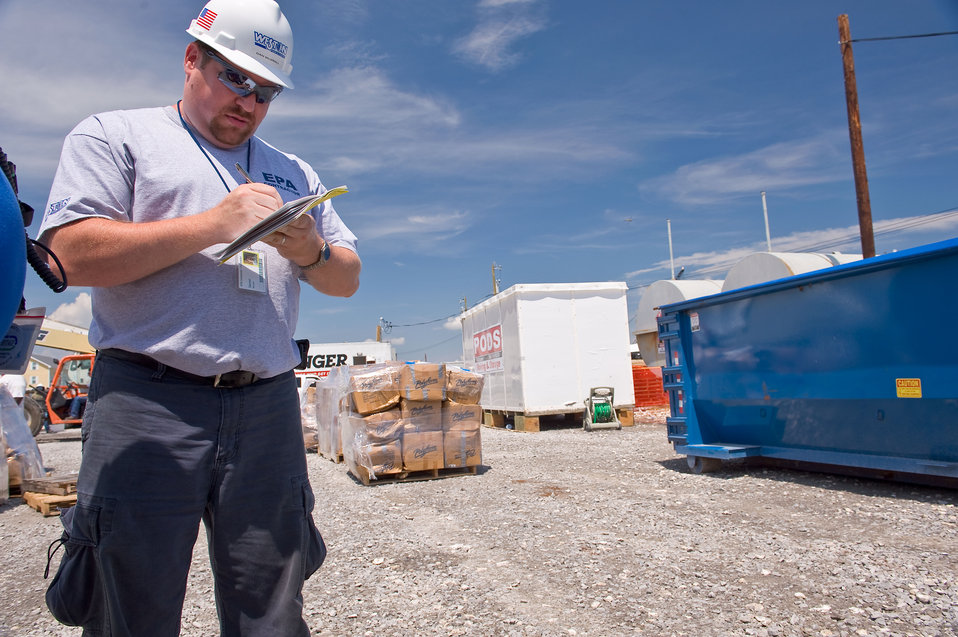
August 6, Taking note of oil waste containers

Dan Muzrall, EPA Contractor, makes notes during an inspection of waste containers.

EPA is visiting each staging/decontamination area and landfill that is receiving oil-contaminated waste from the Gulf oil spill cleanup.

Learn more at: www.epa.gov/bpspill/waste.html
EPA visits US EPA photo by Eric Vance.